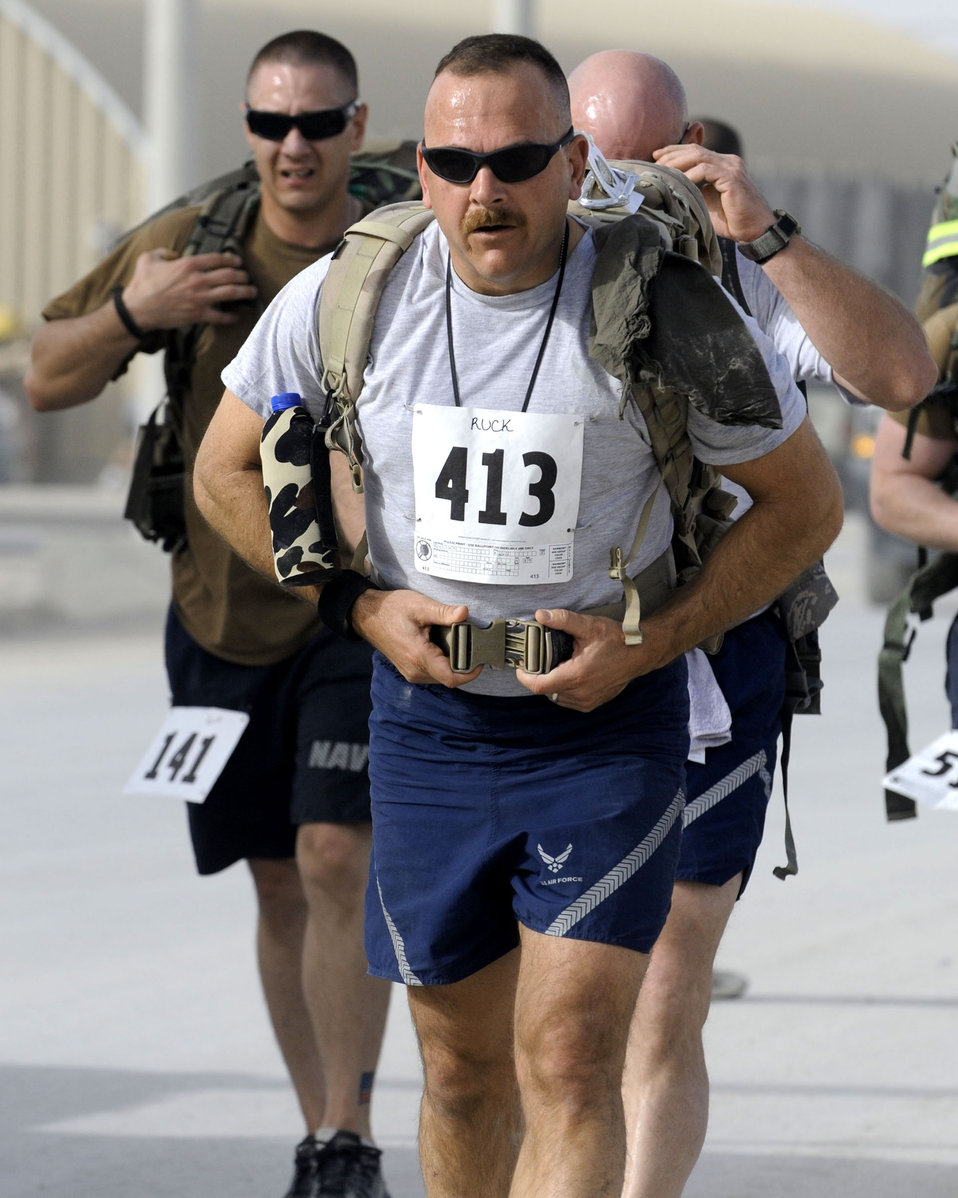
Kandahar members run for charity

Servicemembers participate in a fundraiser March 21, 2010, at Kandahar Airfield, Afghanistan. Members chose one of three ways to participate: a five kilometer run, a 10-kilometer run or a biathlon that consisted of a 5K run followed by another 5K run with a 35-pound ruck sack strapped to their backs.